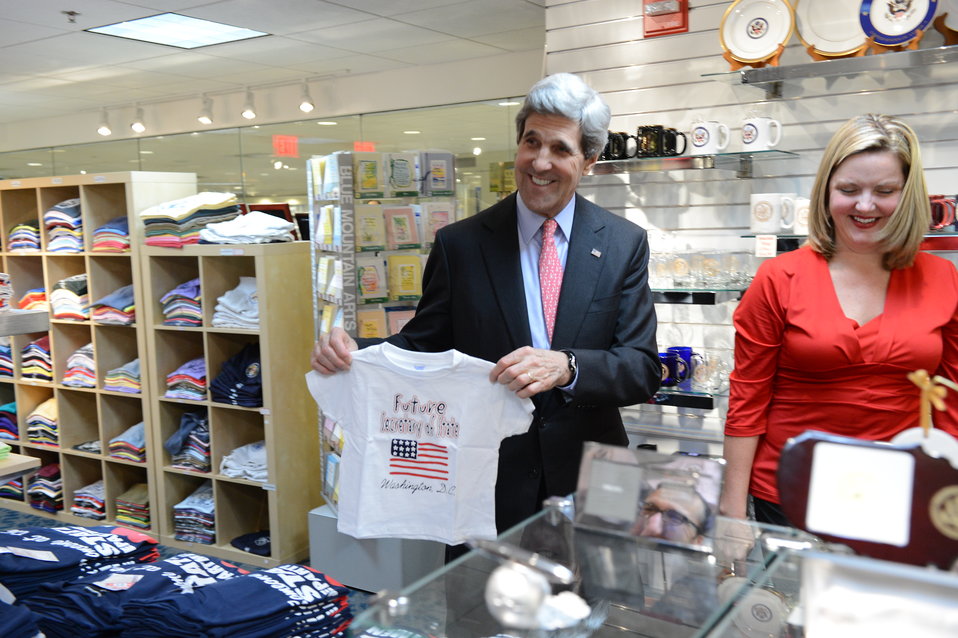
Secretary Kerry Visits the Gift Shop

U.S. Secretary of State John Kerry visits the gift shop at the U.S. Department of State in Washington, D.C., February 15, 2013.